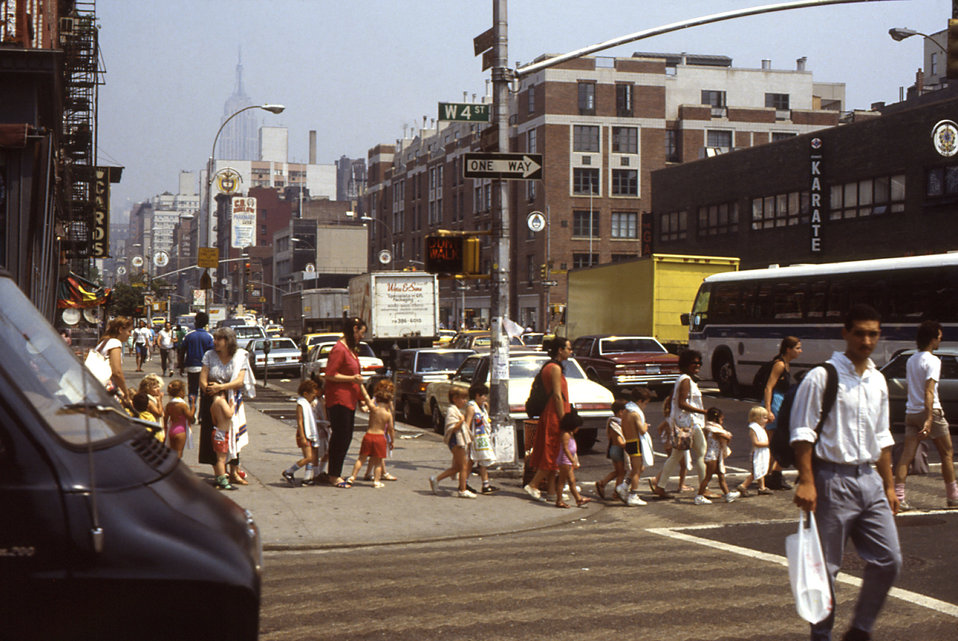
This 1988 photograph depicted numbers of children as they were being helped by adults safely across a New York City street.